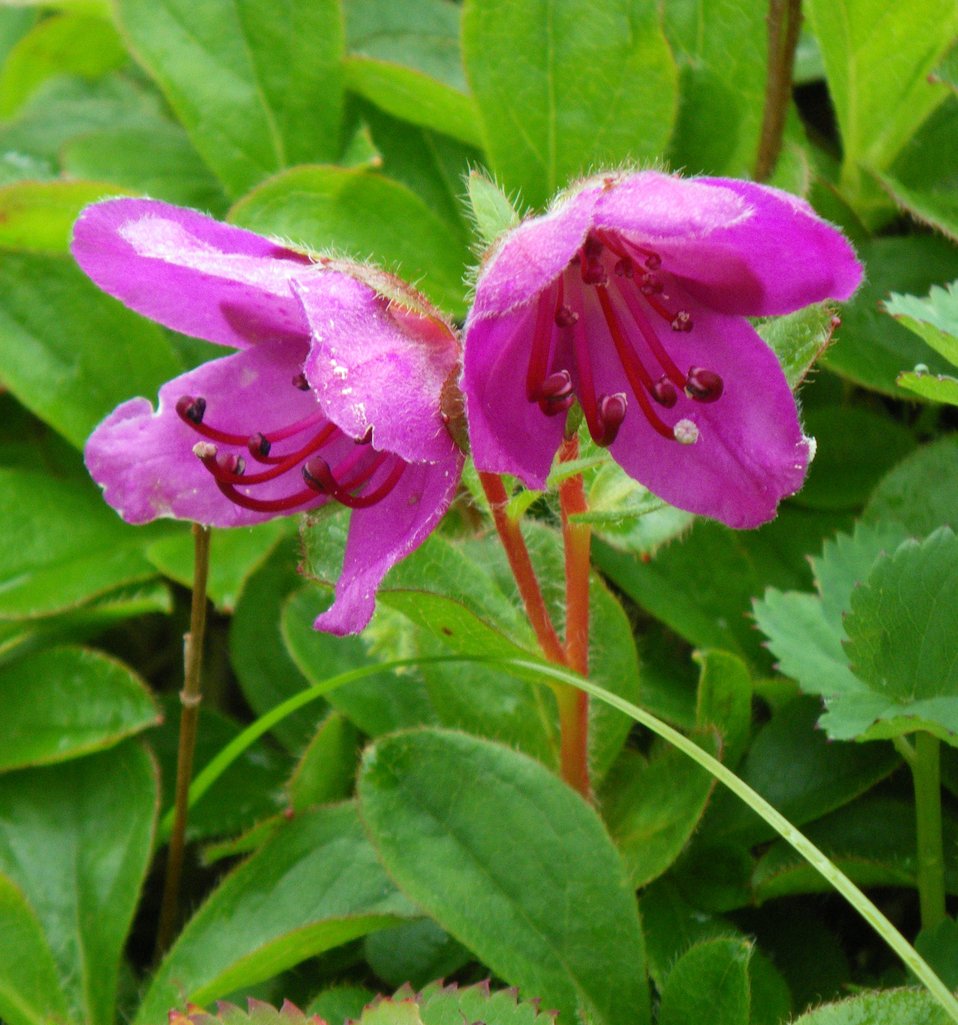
Kamchatka rhododendron

Izembek National Wildlife Refuge